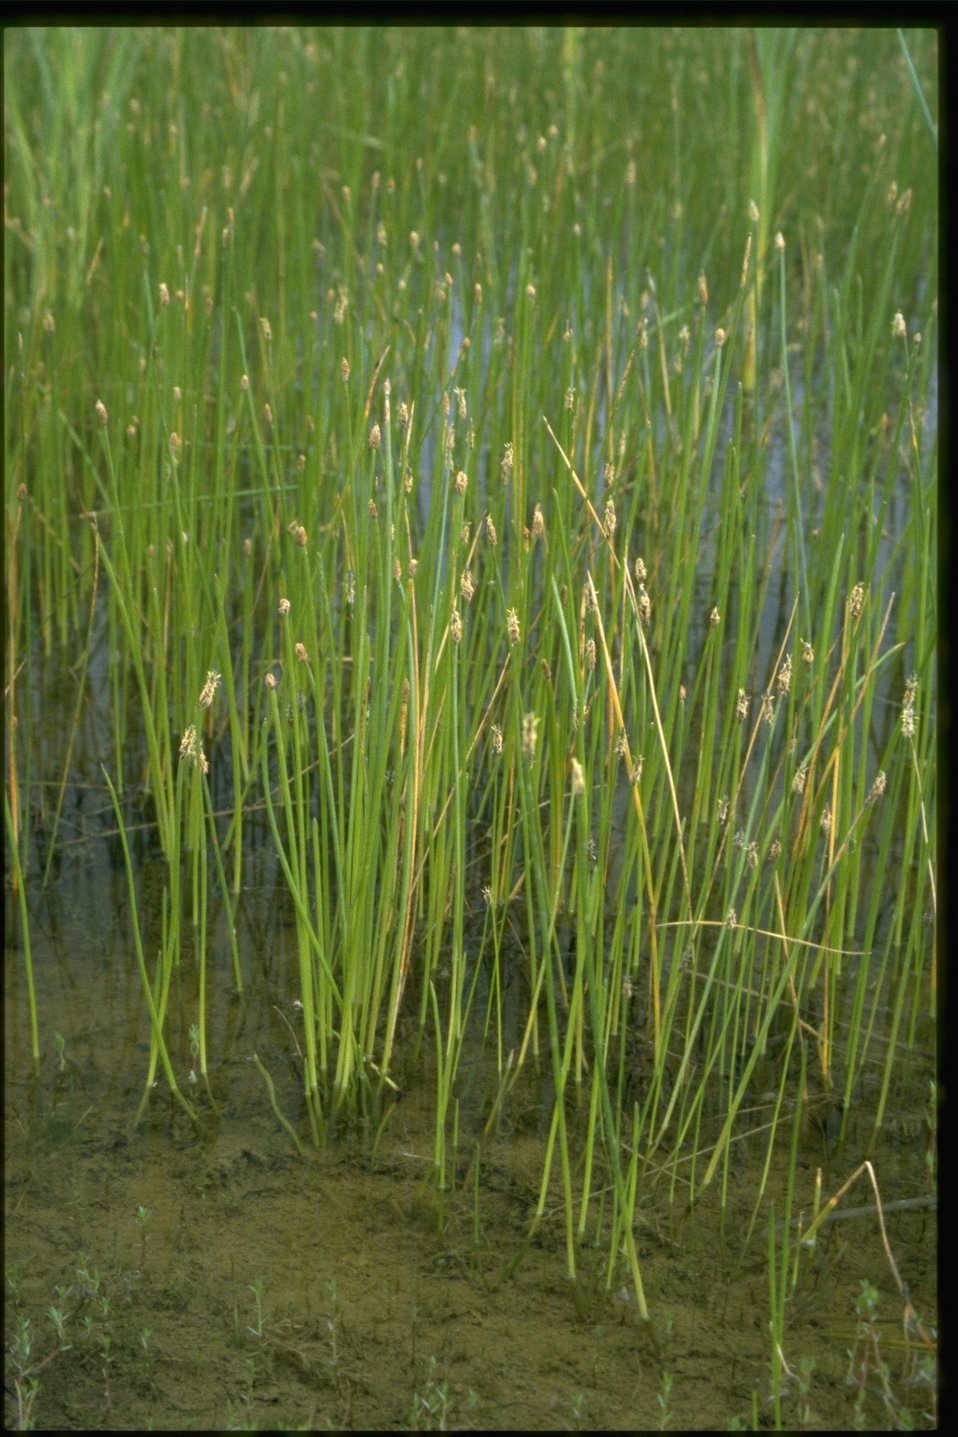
Medium shot of Typha latifolia/ Eleochon's.